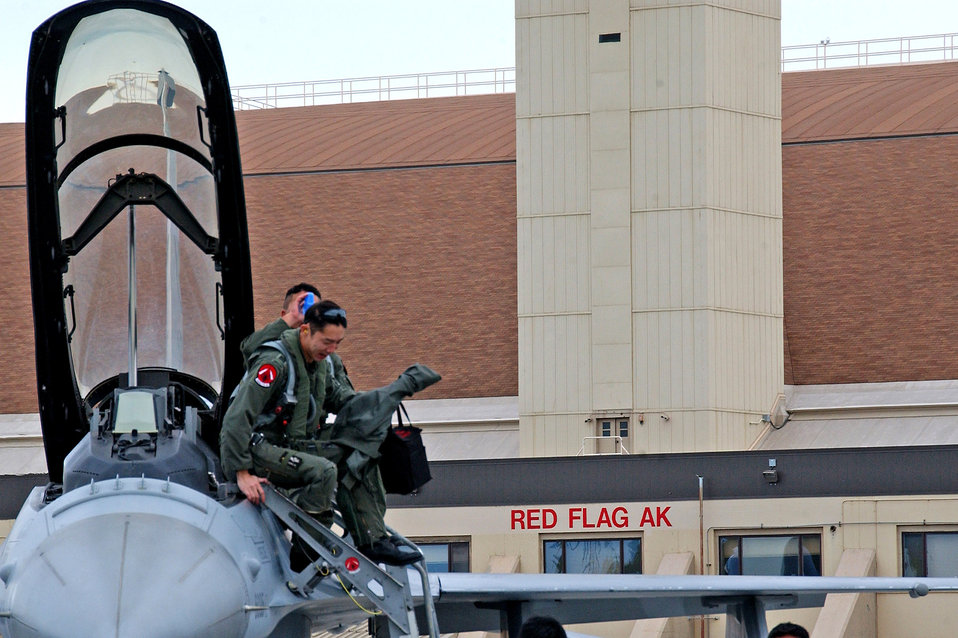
Joint forces combine for Red Flag-Alaska exercise

Republic of Singapore Air Force pilots from the 425th Fighter Squadron climb out of their F-16 at Eielson Air Force Base, Alaska, May 30. More than 1,400 military members from the United States, Singapore and Australia are participating in Red Flag-Alaska 07-2, scheduled May 31 to June 15. Red Flag-Alaska, a series of Pacific Air Forces commander-directed field training exercises for U.S. forces, provides joint offensive counter-air, interdiction, close-air support and large-force employment training in a simulated combat environment.